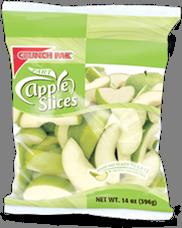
RECALLED – Apple slices

November 14, 2013 – Product Recall – Crunch Pak Issues Voluntary Recall of Limited Quantities of Crunch Pak Brand Apple Slices Because of Possible Health Risk.